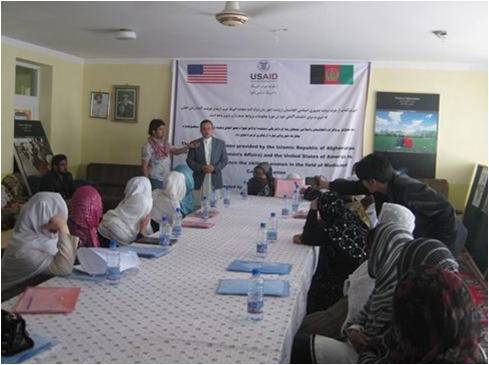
Tuning in to Women and Media